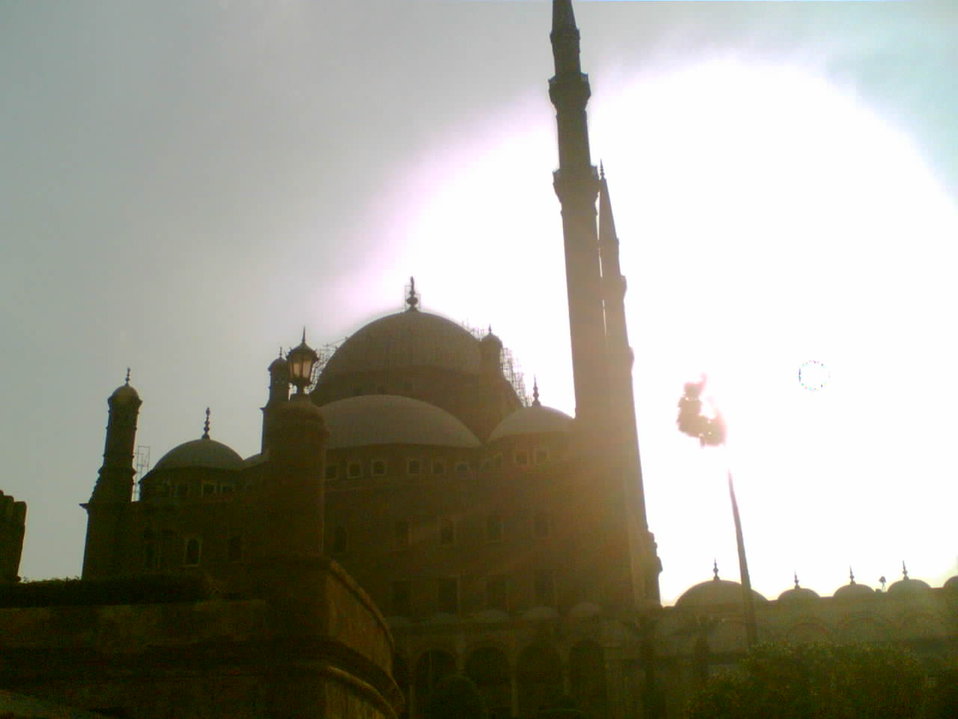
Salah El-Din Citadel in Cairo-Egypt